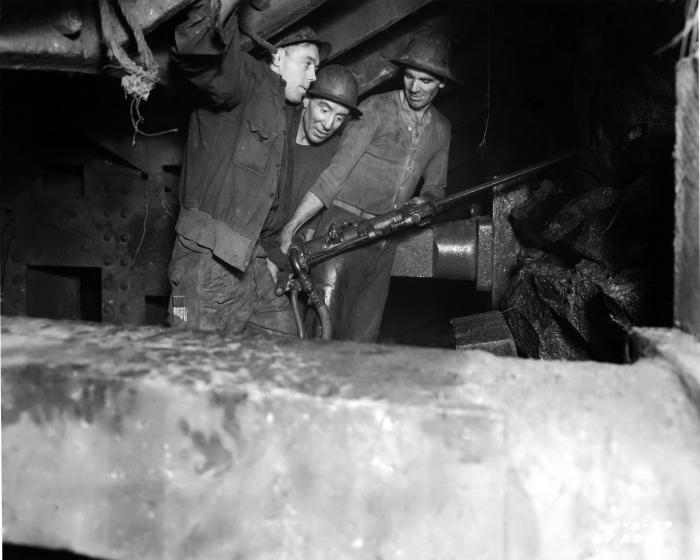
This historical image was provided by the Center for Disease Control's (CDC), National Institute for Occupational Safety and Health (NIOSH). The photograph depicted three tunnel workers inside the Queens Midtown Tunnel, in Queens, New York, while the subterranean passageway was under construction. These men were working with the drill face in the South Tunnel of this subterranean network. Note that each was wearing a protective hardhat, but no gloves, filtered breathing masks, or ear plugs, though it cannot be determined from this image if these items were necessary. Two of the men were manipulating a pneumatic drill, possible to free some rocky obstacles encountered by the main drill bit, in order to facilitate the primary drilling activity.